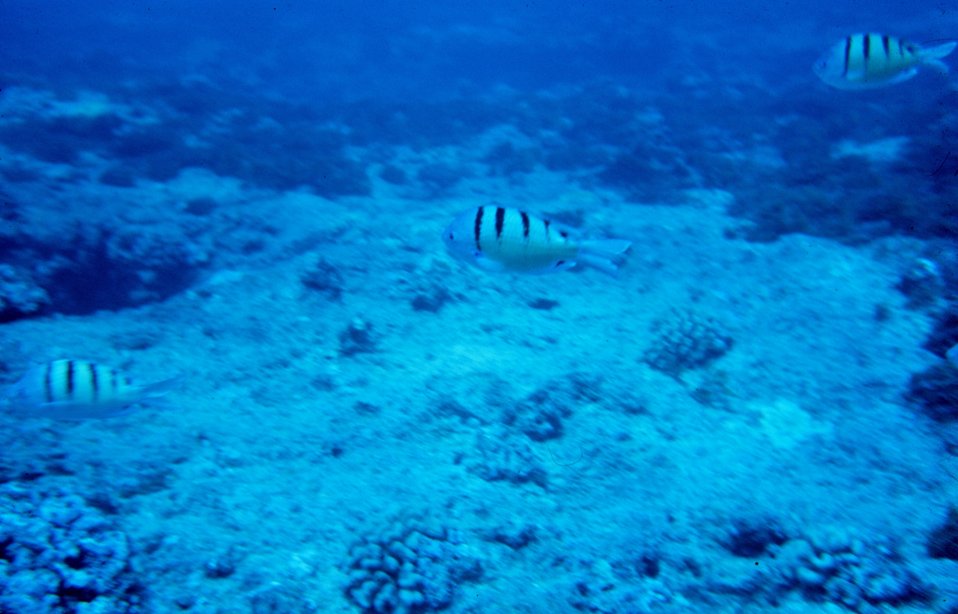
Abudeduf abdominalis - Sergeant Major fish.